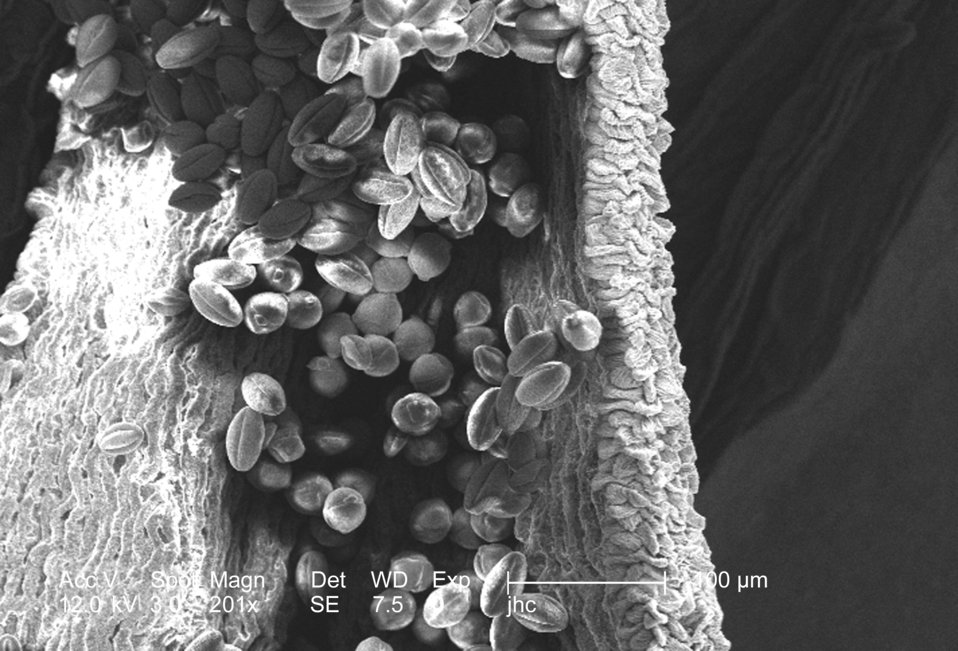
Magnified 201x, this scanning electron micrograph (SEM) revealed some of the morphologic ultrastructure found amongst a collection of pollen found within the dehisced, or split open, anther of a yellow "Fireworks" sundrops, Oenothera fruticosa flower. The circular shape of these grains means that they still need to further dry before they are ready to be dispersed. The drying will also change their morphology, whereupon, the grains will become elliptical, or "football"-shaped. These pollen grains were of the "tricolpate" type, which means that the outer surface is traversed from pole to pole, by three symmetrically placed furrows.